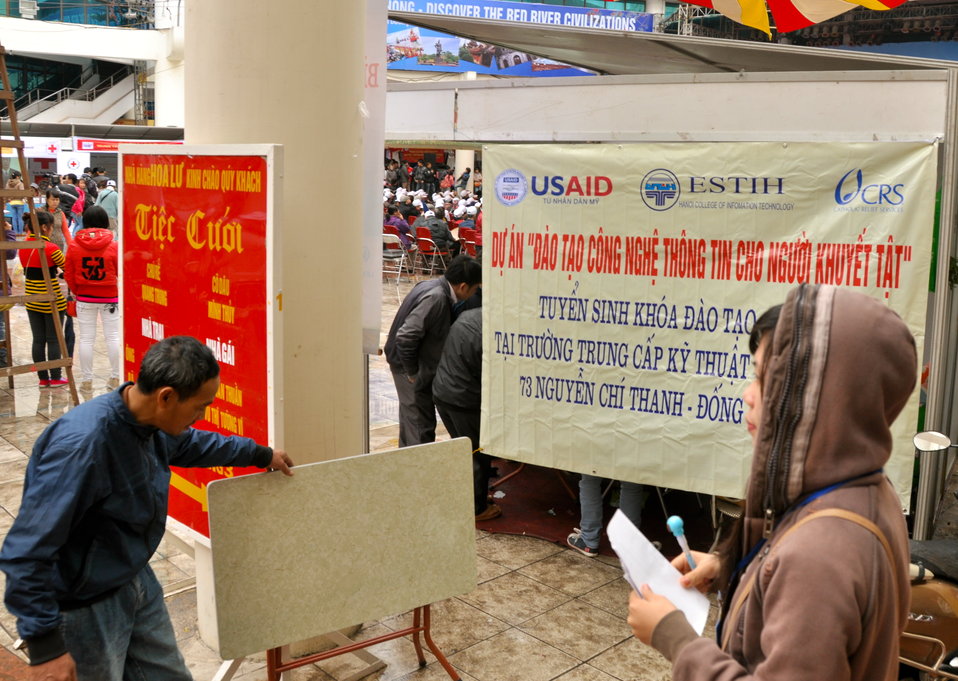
USAID joins celebration of International Day of Persons with Disabilities in Hanoi, Vietnam

December 2, 2012